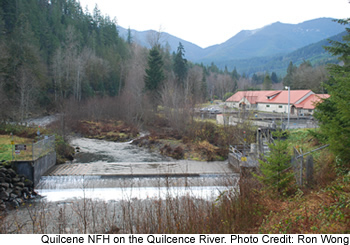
Quilcene River

The Quilcene River flows above the Quilcene National Fish Hatchery on the west side of the Olympic Peninsula in Washington State.